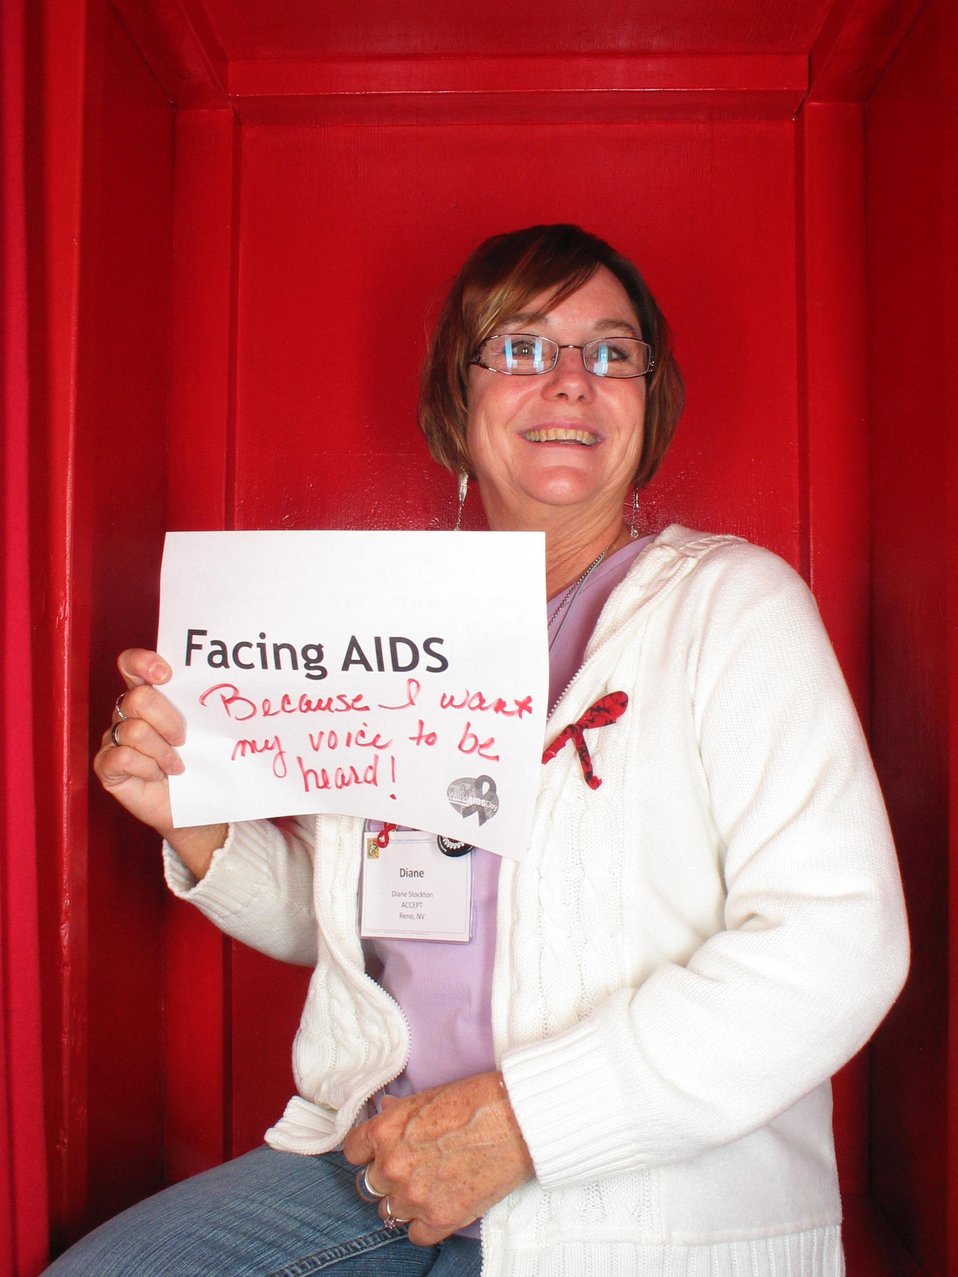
Facing AIDS because I want my voice to be heard!